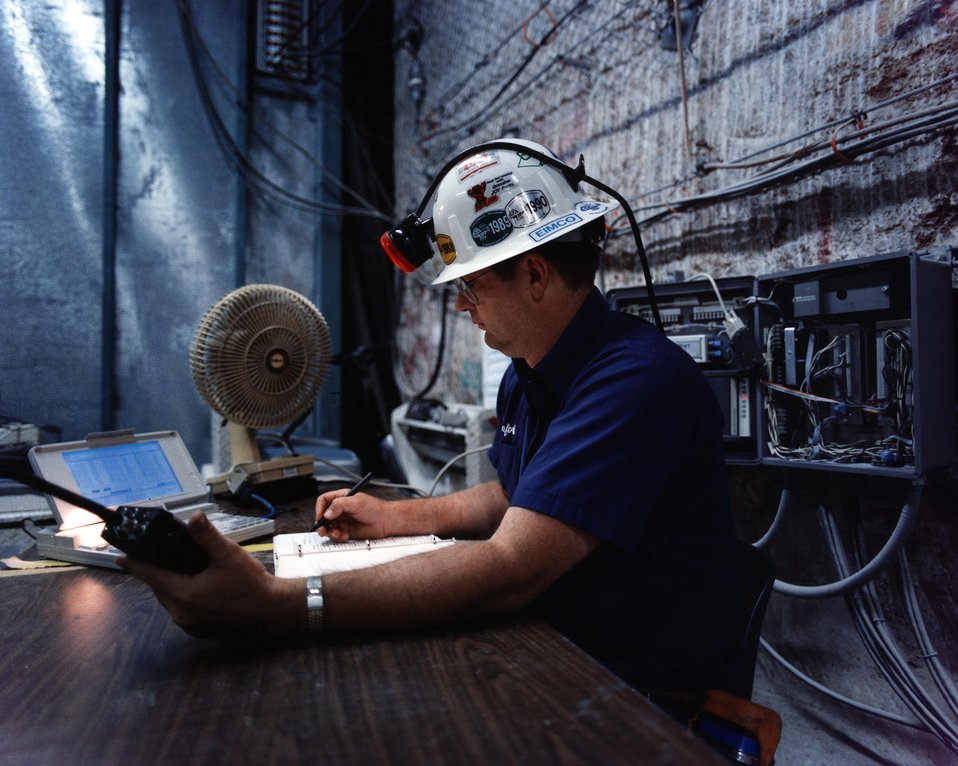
A WIPP GEO-TECHNICAL ENGINEER REVIEWS ROCK MECHANIC DATA IN THE UNDERGROUND.

THE GEO-TECHNICAL ENGINEERS AT WIPP WORK IN THE UNDERGROUND 2150 FEET BELOW THE SURFACE. THE FACILITY IS MINED IN 225 MILLION YEAR OLD SALT BEDS LOCATED IN SOUTHEASTERN NEW MEXICO. THE WASTE ISOLATION PILOT PLANT IS A DOE RESEARCH AND DEVELOPMENT FACILITY DESIGNED TO DEMONSTRATE THE SAFE DISPOSAL OF DEFENSE RADIOACTIVE WASTE IN ANCIENT SALT BEDS.